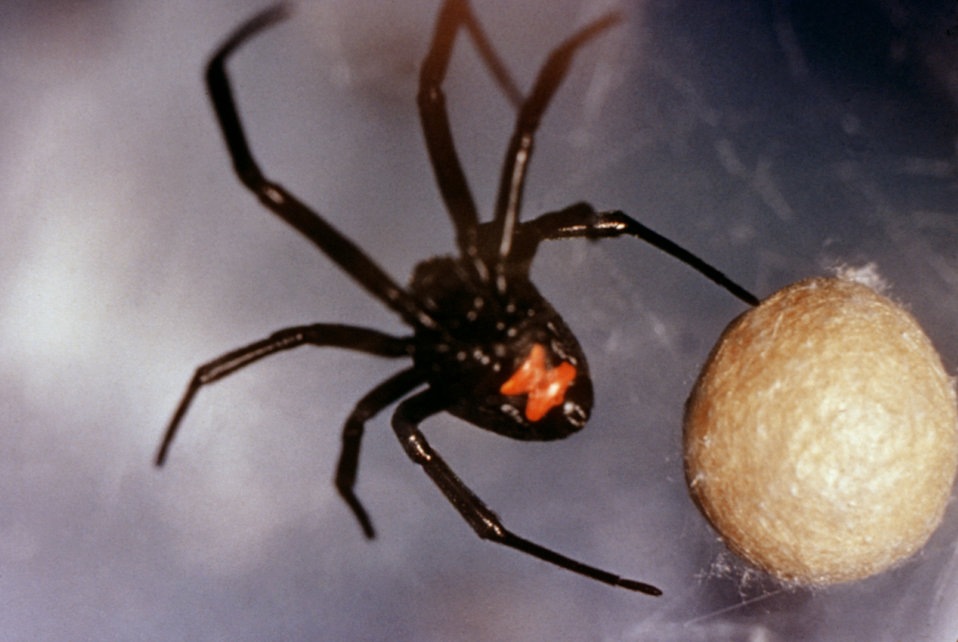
This 'Black Widow' spider, Latrodectus mactans, was photographed during a study of migrant labor camp disease vectors.